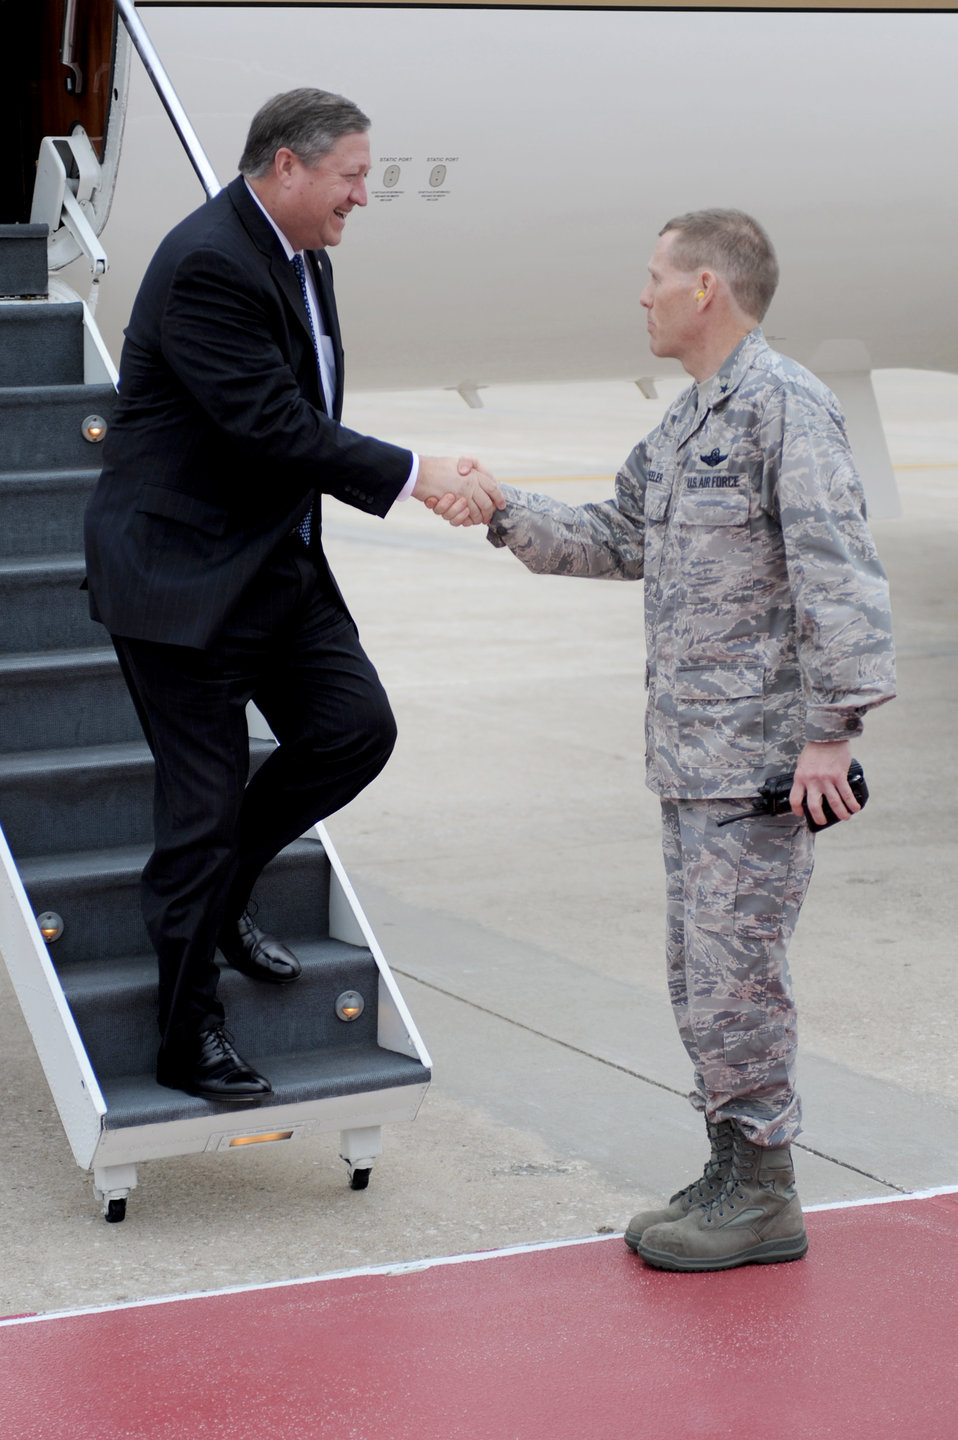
SecAF impressed with Airmen, B-2

Secretary of the Air Force Michael Donley is greeted by Brig. Gen. Robert Wheeler June 8, 2010, at Whiteman Air Force Base, Mo. Secretary Donley visited Whiteman AFB to become more familiar with the wing's mission and speak with base Airmen. General Wheeler is the 509th Bomb Wing commander.